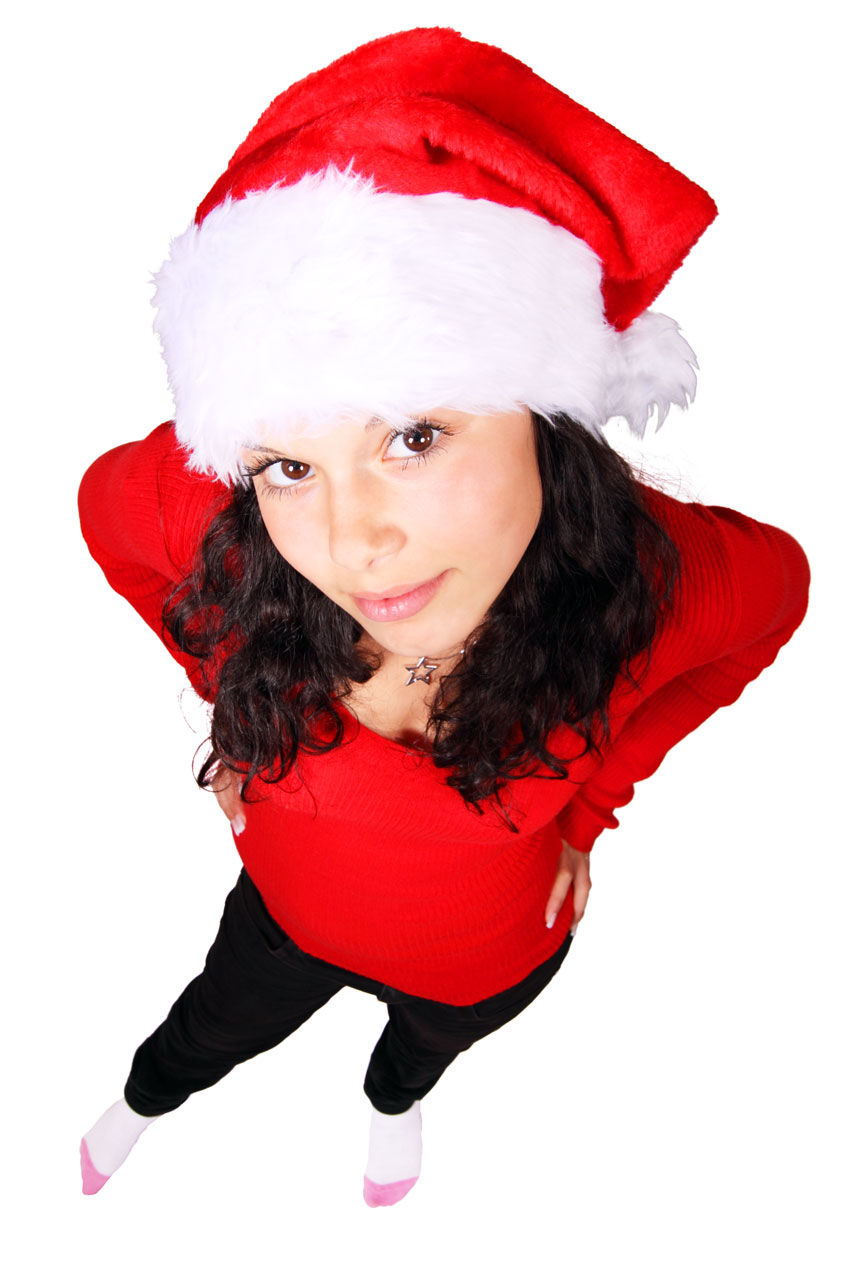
Santa looking up

Cute red santa looking up.